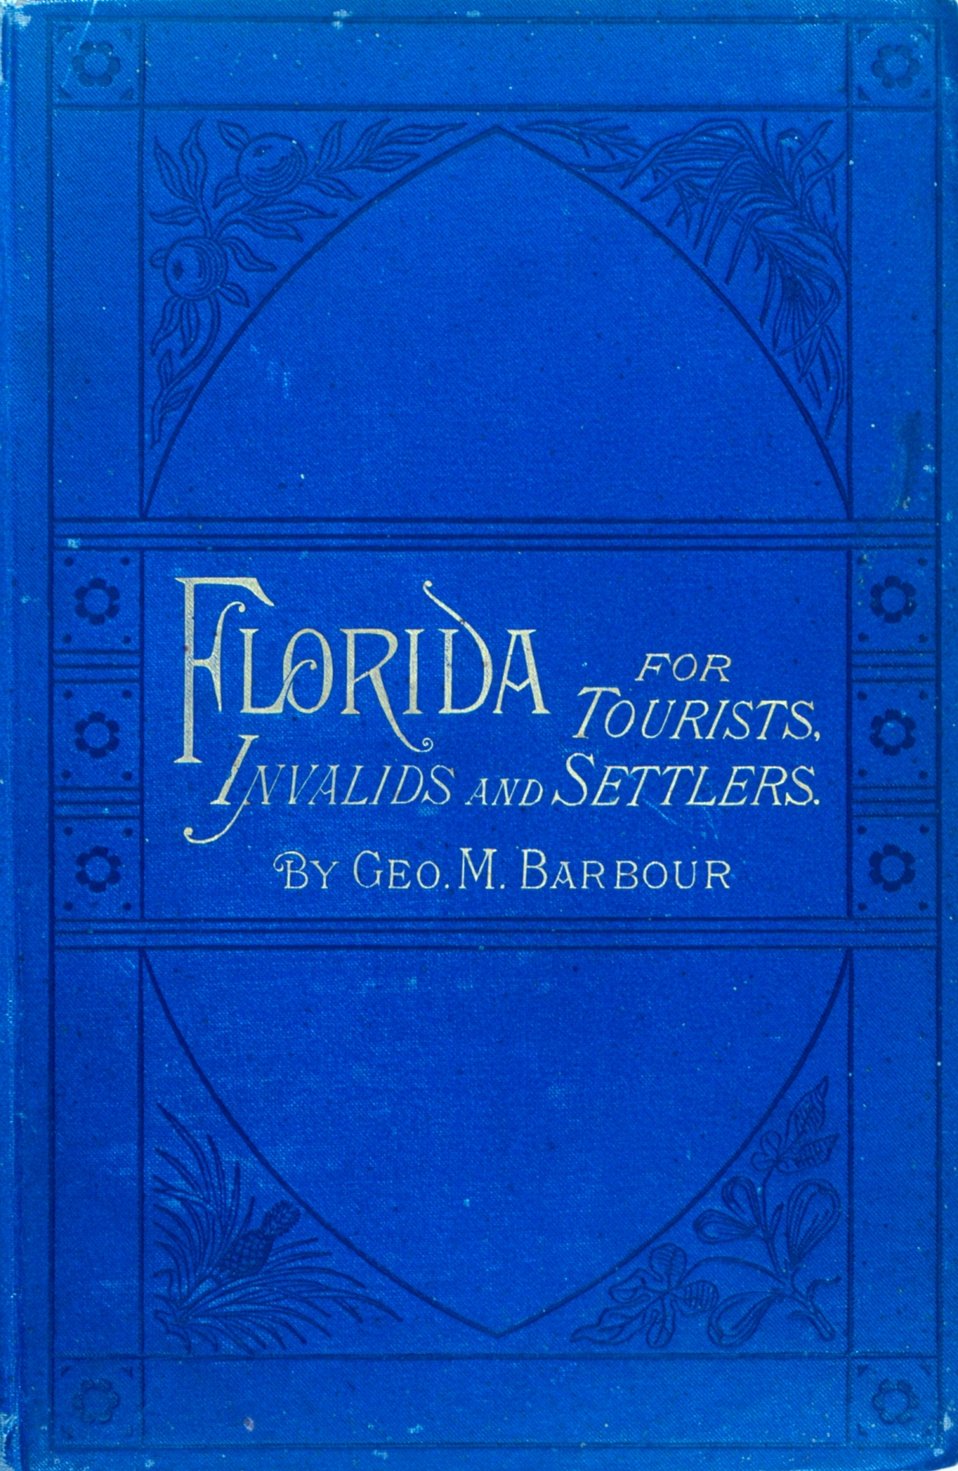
The cover of 'Florida for Tourists, Invalids, and Settlers' by George M. Barbour , 1881. Library Call No. F316 .B23 1881.